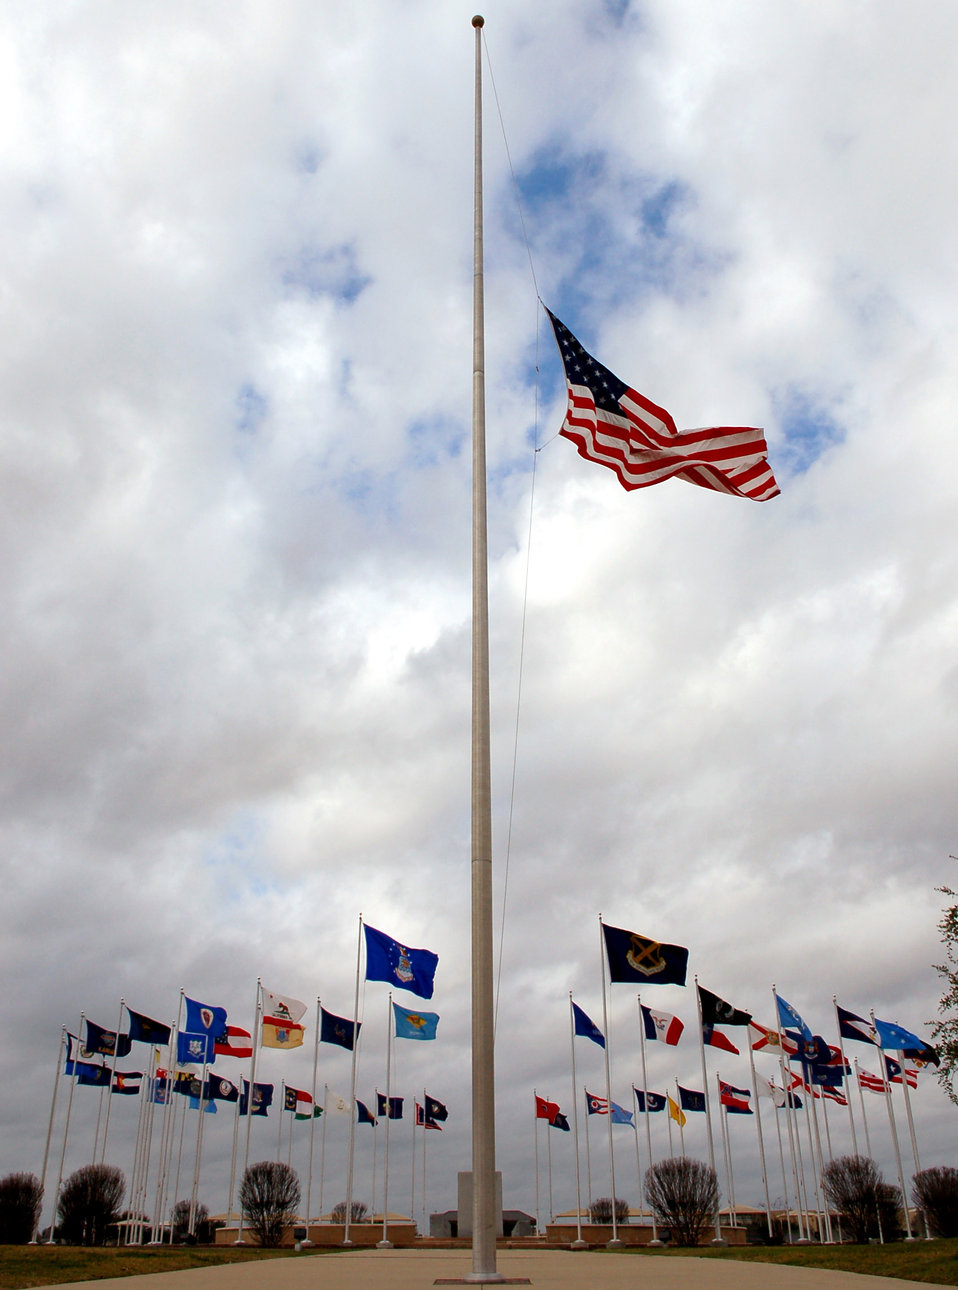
We remember

The United States flag at Lackland Air Force Base, Texas, flies at half staff Dec. 28 in honor of former President Gerald Ford who died Dec. 26.